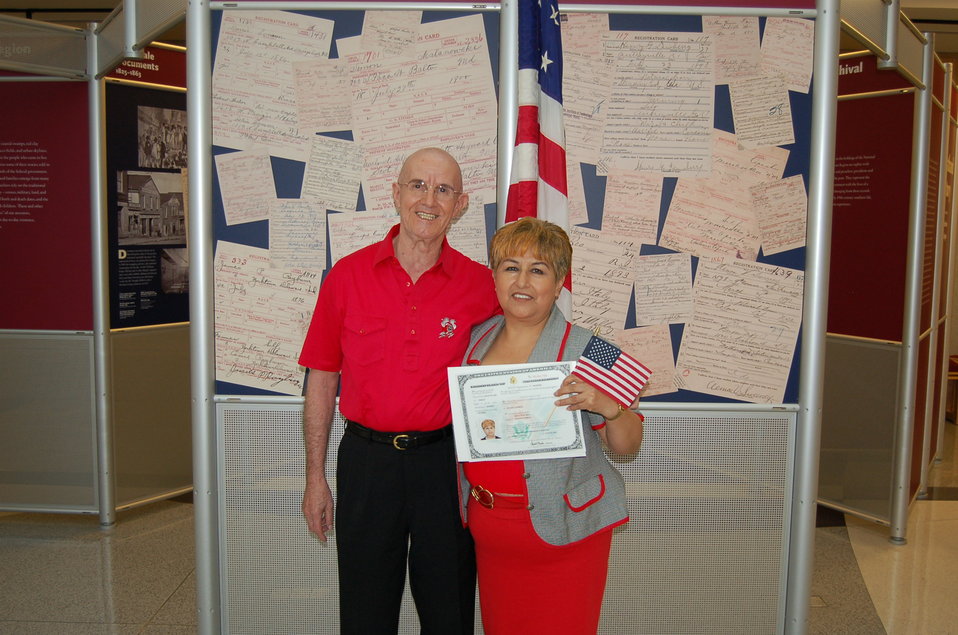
New Citizens